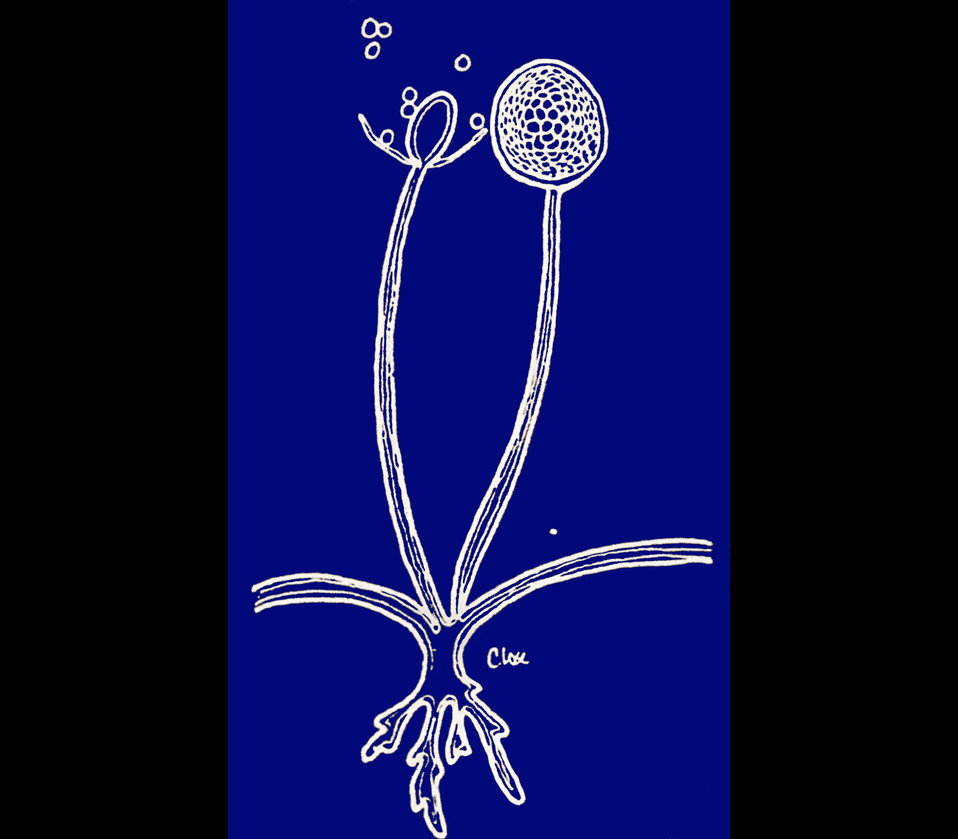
Illustration of sporangiospores within sporangium